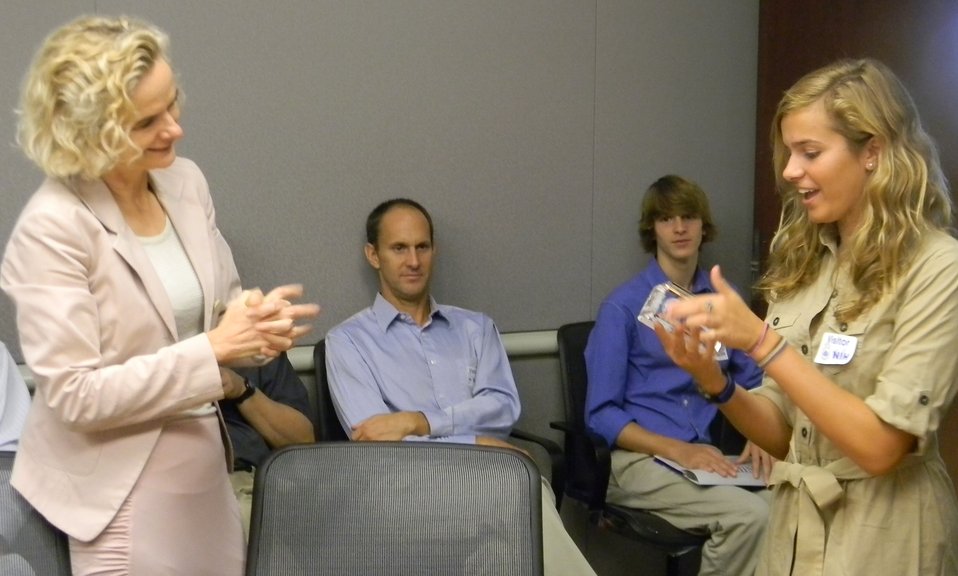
Volkow and Schumacher2

Dr. Nora Volkow (NIDA Director) presents Addiction Science Award to Darby Kathryn Schumacher (2nd place winner)